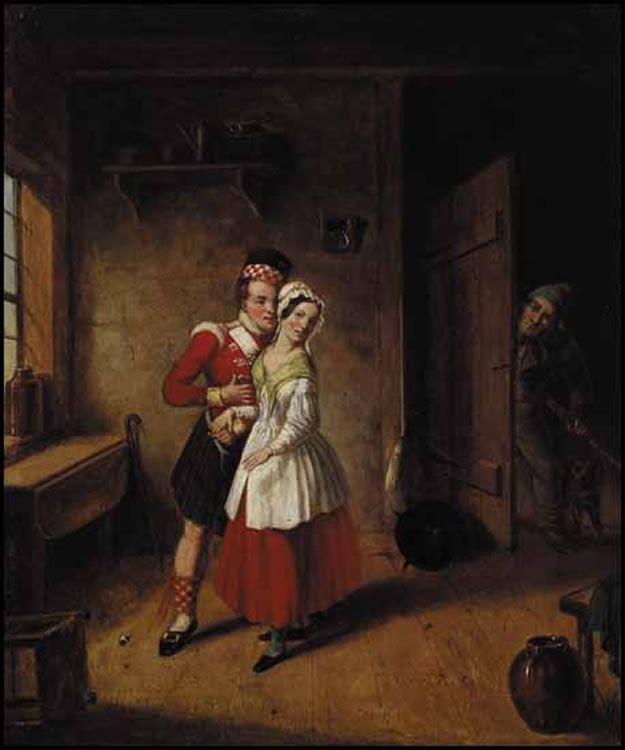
The Jealous Husband, oil painting by Cornelius Krieghoff